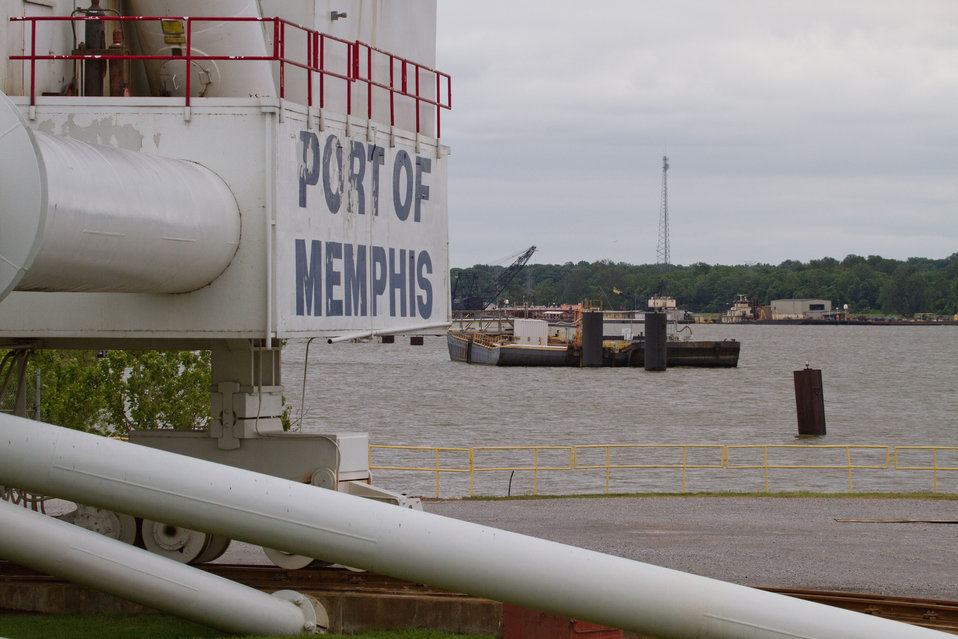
The 1,250 ton white crane and all other dock operations at Presidents Island’s industrial areas are halted because the Mississippi River water level is 16 feet higher than normal at the International Port of Memphis near Memphis, TN, on Saturday, May 14. 2011. Barges and ships need the dolphins (thick brown cylindrical poles in the water) to stand more than the few feet they currently stand above the water. Usually they are 16” higher. At this height the lines that barges use to tie them to the dolphins can slip off, sending the vessel adrift.